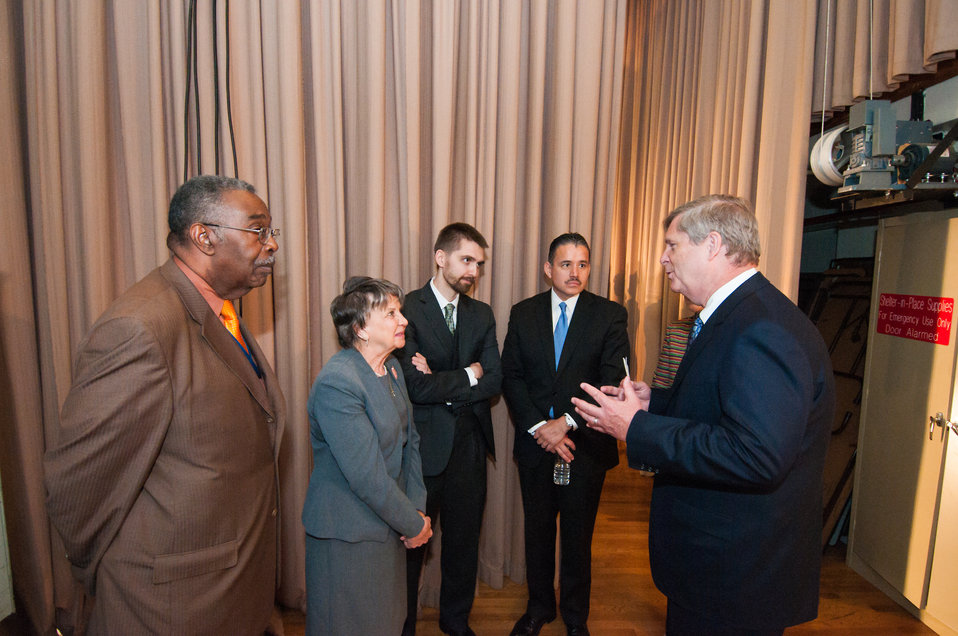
From left: Office of the Secretary employee Sam Shanklin, Office of the Executive Secretariat employee Sally Liska, Departmental Administration employee Chris Nelson, Agriculture Deputy Chief of Staff Oscar Gonzales, and Agriculture Secretary Tom Vilsack meet back stage to welcome First Lady Michelle Obama to the U.S. Department of Agriculture (USDA) in Washington, D.C. on Friday, May 3, 2013. The First Lady visited USDA employees to thank them for their service and dedication. She also, reminded the employees of the importance of the work they do to support American farmers and ranchers, protecting the environment, lifting up rural communities, and keeping food safe, and working to end hunger.